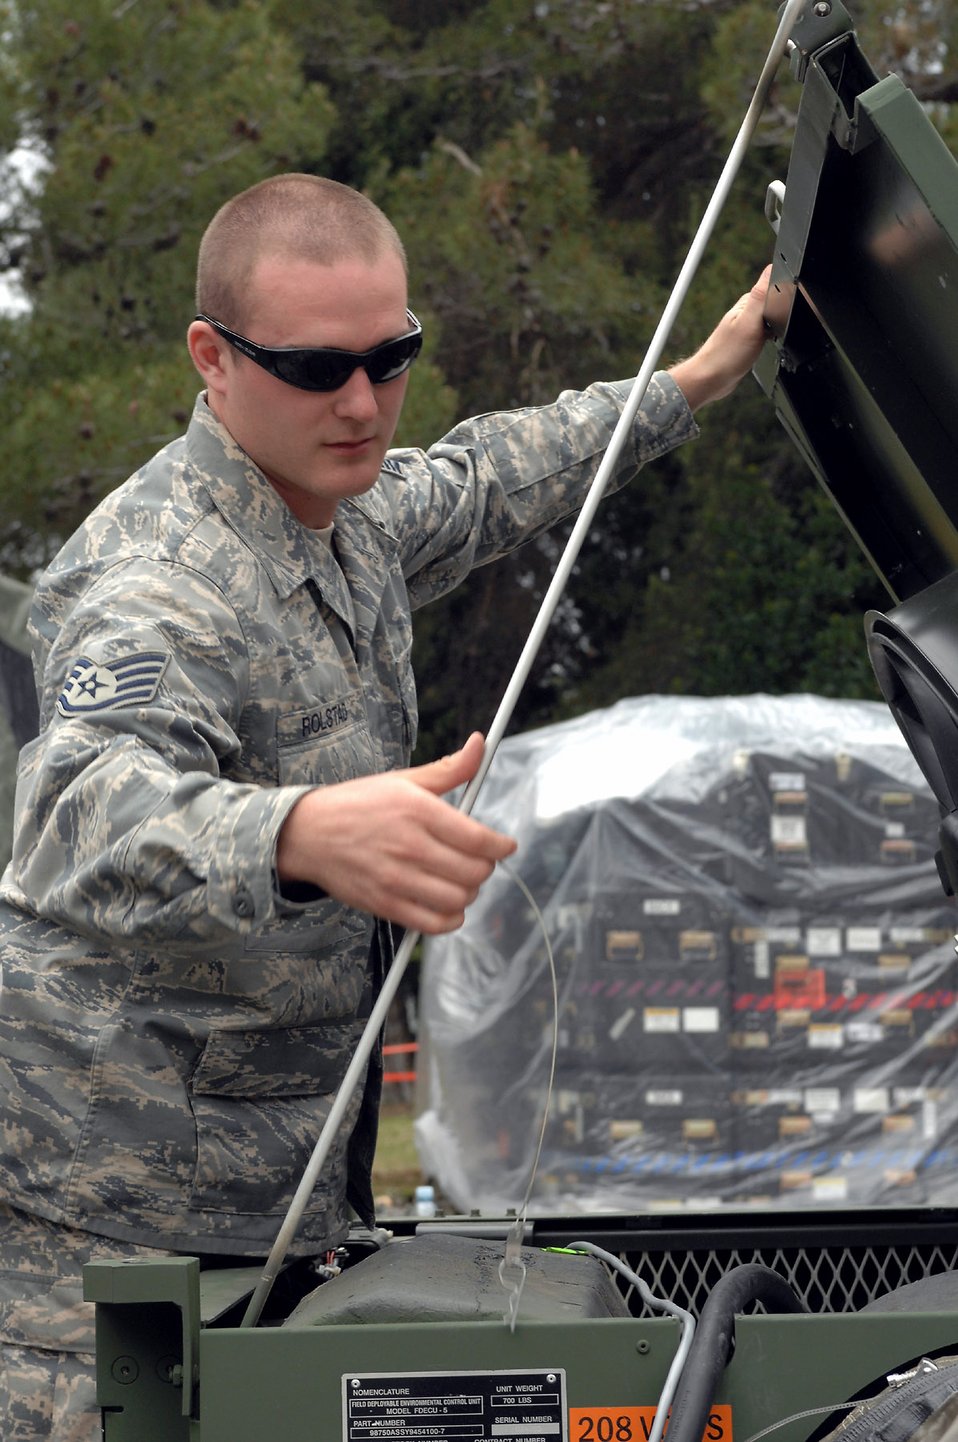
Airmen set up communication lines for exercises in Croatia

Staff Sgt. Travis Rolstad ensures an air-conditioning unit is working properly for Medical Central and Eastern Europe Exercise 2008 April 29 at Divulje Training Base, Croatia. Seventeen nations are participating in the exercise May 2 through 15. The exercise focuses on mass-casualty training scenarios and humanitarian aid in response to crises situations. More than 400 multinationals are attending the exercise in support of the Partnership for Peace initiative. Sergeant Rolstad is assigned to the 1st Combat Communications Squadron from Ramstein Air Base, Germany.